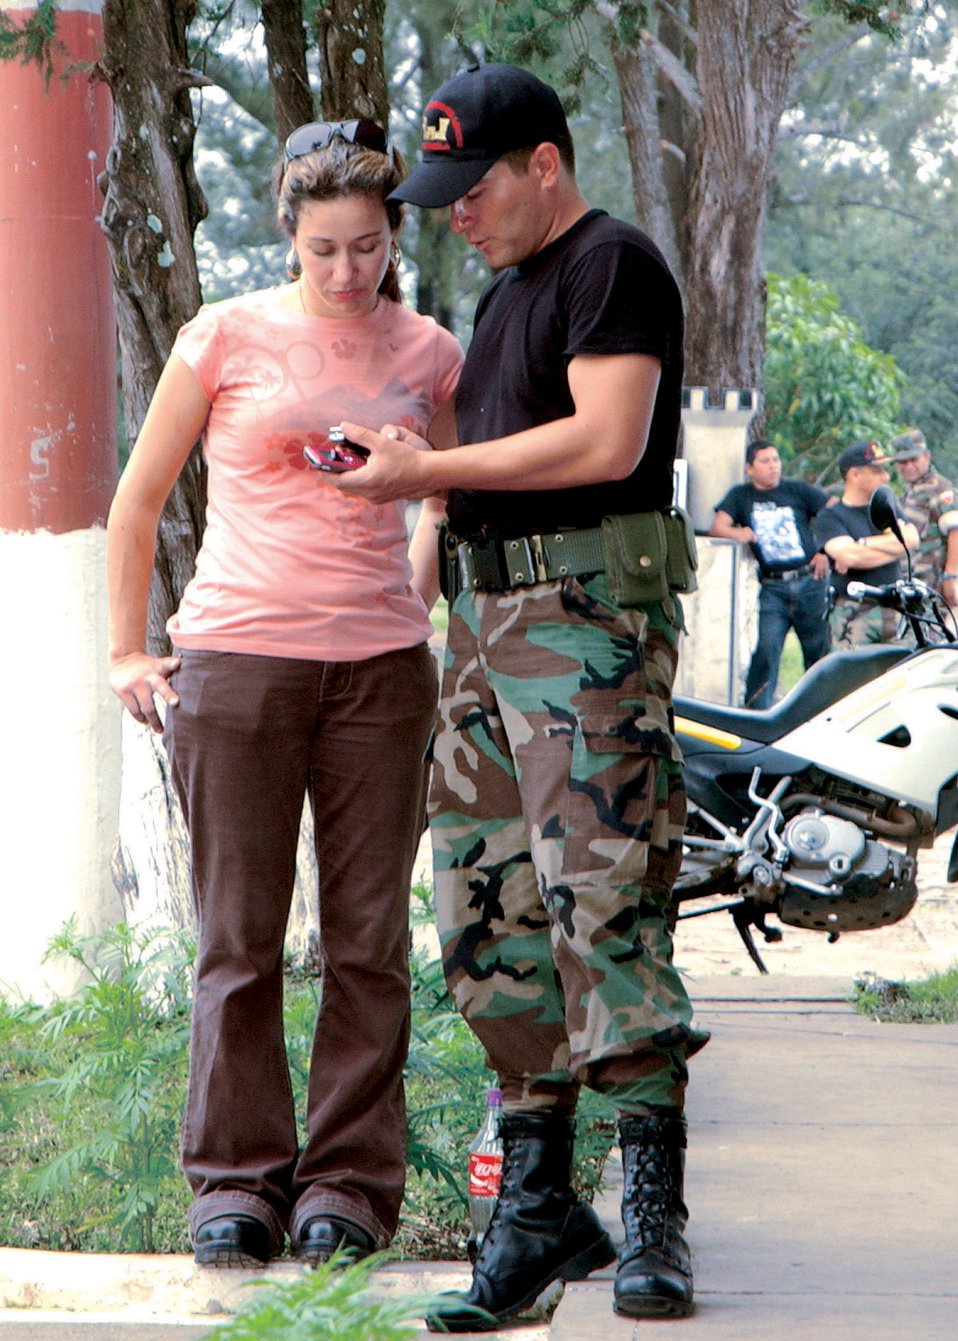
Exercise gives Guardsman a new perspective

Tech. Sgt. Shirley Morales, in Santa Rosa, Guatemala, for a medical exercise, reminisces with a childhood friend who is now in the Guatemalan Army. Sergeant Morales, who was born and raised in Santa Rosa, accompanied the 163d Medical Group during a recent medical readiness training exercise to assist with translating for the team. Sergeant Morales is a force development technician with the 163rd Reconnaissance Wing.